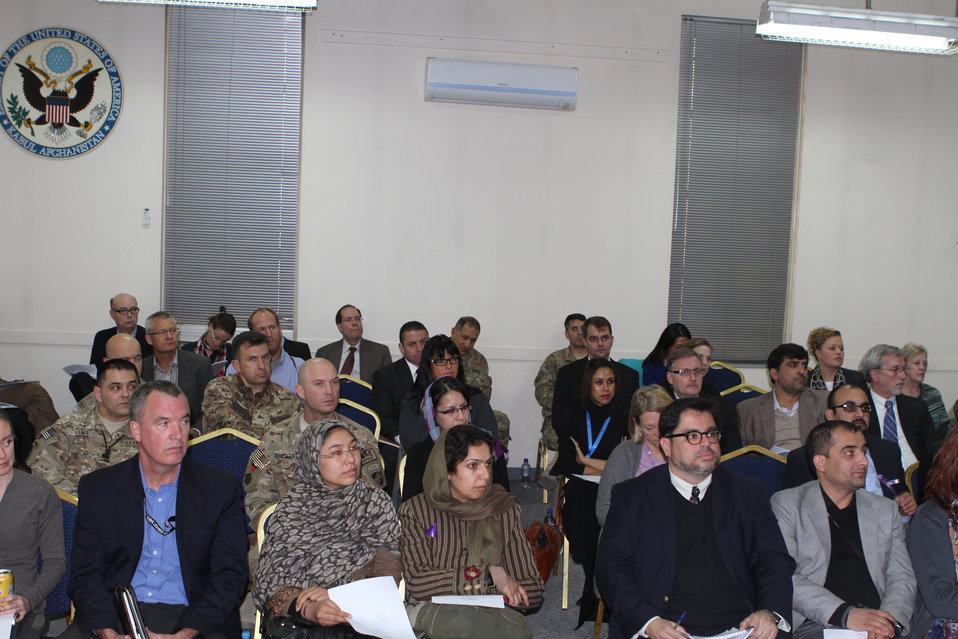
Presentation of the ACTA Civil Society analysis of the FY 1392 Afghan national budget